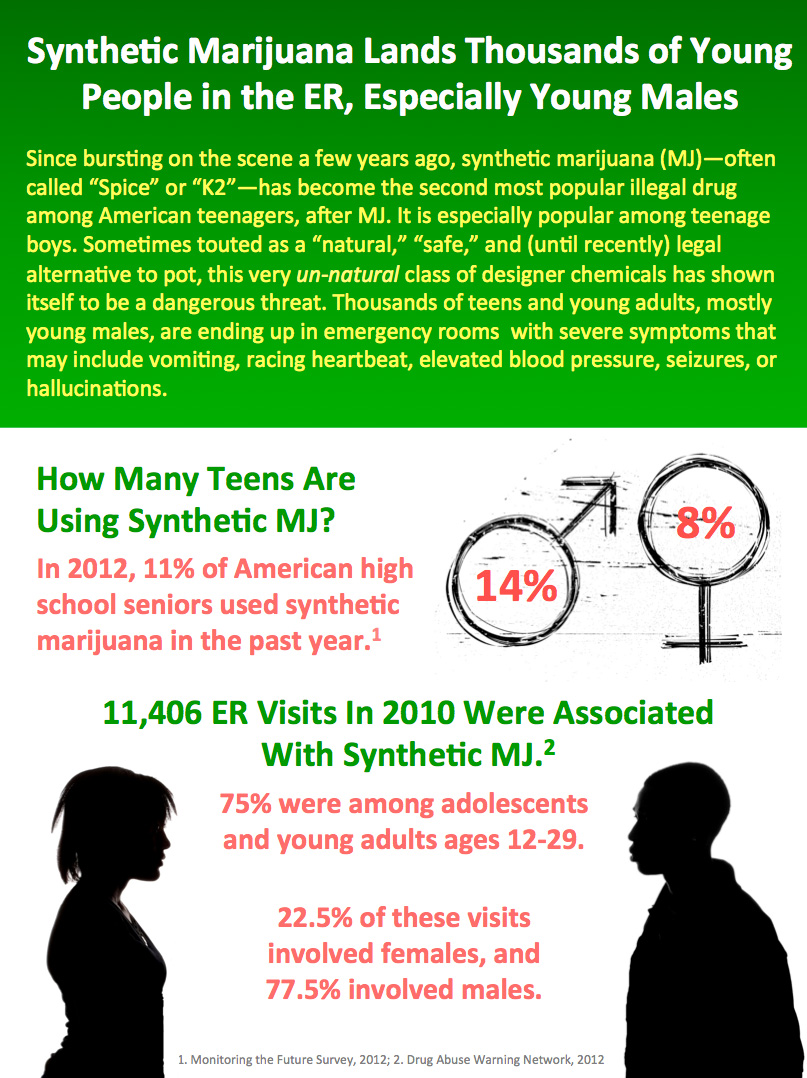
Synthetic Marijuana Lands Thousands of Young People in the ER, Especially Young Males

Text Description of Infographic

Since bursting on the scene a few years ago, synthetic marijuana (MJ)—often called “Spice” or “K2”—has become the second most popular illegal drug among American teenagers, after MJ. It is especially popular among teenage boys. Sometimes touted as a “natural,” “safe,” and (until recently) legal alternative to pot, this very un-natural class of designer chemicals has shown itself to be a dangerous threat. Thousands of teens and young adults, mostly young males, are ending up in emergency rooms with severe symptoms that may include vomiting, racing heartbeat, elevated blood pressure, seizures, or hallucinations.

Top graphic (male, female symbols): By gender, 14% of male and 8% of female high school seniors abused synthetic marijuana.

How Many Teens Are Using Synthetic MJ?

In 2012, 11% of American high school seniors used synthetic marijuana in the past year.1
11,406 ER Visits In 2010 Were Associated With Synthetic MJ.2

75% were among adolescents and young adults ages 12-29
22.5% of these visits involved females, and 77.5% involved males
Resources

1. Monitoring the Future Survey, 2012; 2. Drug Abuse Warning Network, 2012